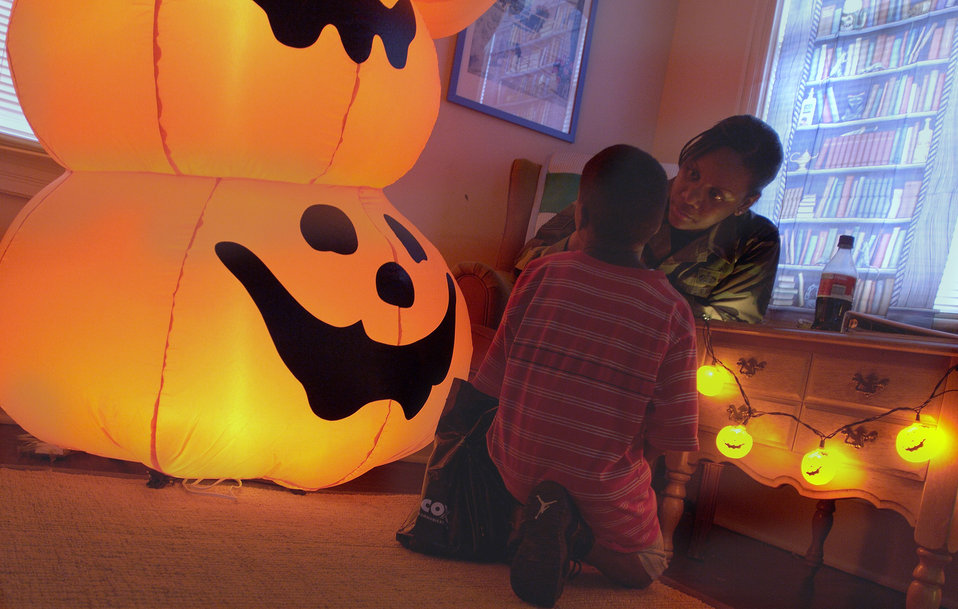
Halloween party

LANGLEY AIR FORCE BASE, Va. (AFPN) -- Staff Sgt. Verna Ellis paints the face of a participant during a Halloween party given by Full Circle and The Children's AIDS Network Designated for Interfaith Involvement, Inc. The party was held Oct. 26 in Hampton, Va. The nonprofit organizers of the event provide access to comprehensive medical, educational, social, financial and mental health services for children living with HIV/AIDS, and their families. Sergeant Ellis participated as a member of Langley's Club 56 Non-Commissioned Officers' Association.